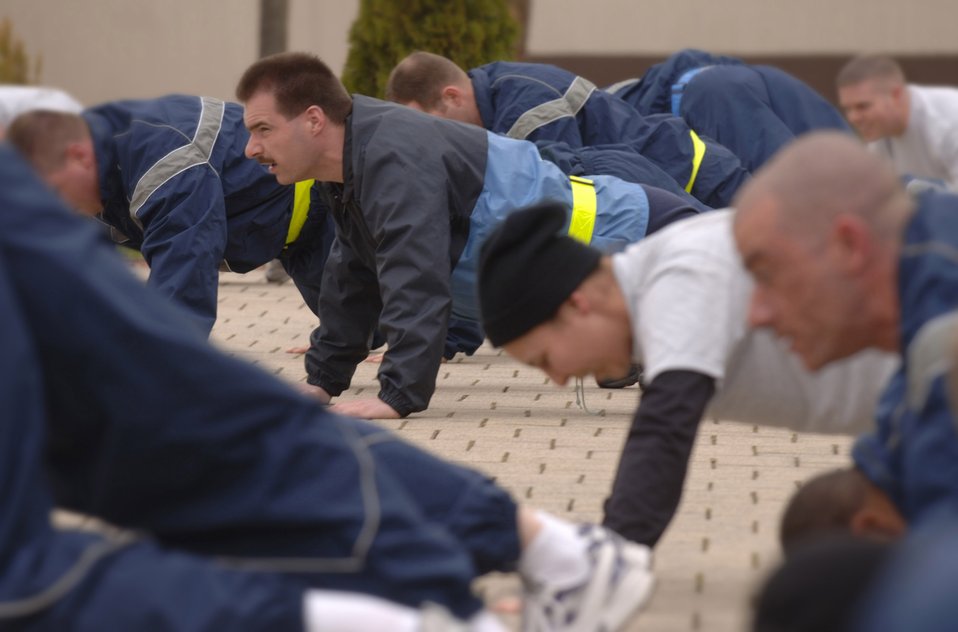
German sergeant enrolls in USAFE NCO Academy

German air force Master Sgt. Holger Fels joins fellow Kisling Noncommissioned Officer Academy students during a daily physical training session April 26 at Kapaun Air Station, Germany. Sergeant Fels, a German NCO Aaademy instructor in Appen, Germany, voluntarily enrolled in the six-week academy course designed for U.S. Air Force technical sergeants to prepare for a four-year special duty assignment as an exchange instructor at the Senior NCO Academy at Maxwell Air Force Base, Ala.